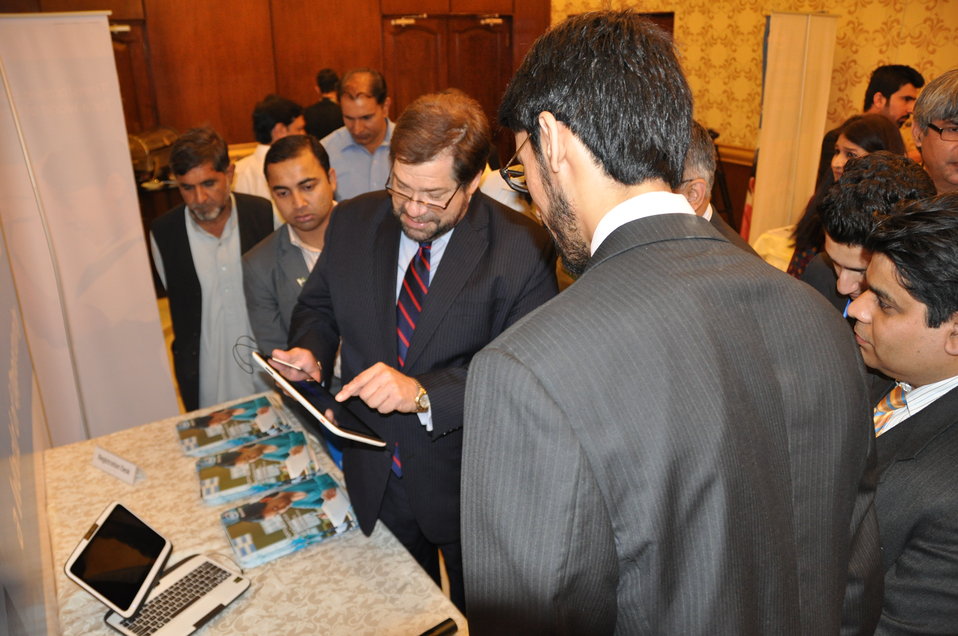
Intel MoU3

USAID Punjab Provincial Director Jeffery Bakken uses one of the tablets that will be part of the education project proposed by Intel in the agreement that was signed on Thursday.